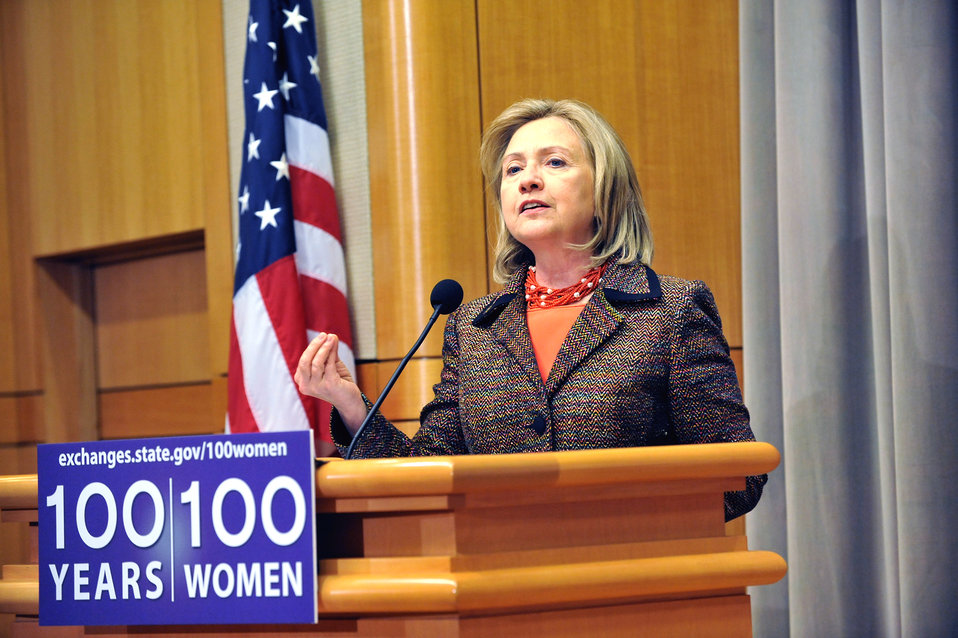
Secretary Clinton Launches the “100 Women Initiative: Empowering Women and Girls through International Exchanges'

U.S. Secretary of State Hillary Rodham Clinton launches the “100 Women Initiative: Empowering Women and Girls through International Exchanges' in the Marshall Conference Center at the U.S. Department of State in Washington, D.C., on March 7, 2011.